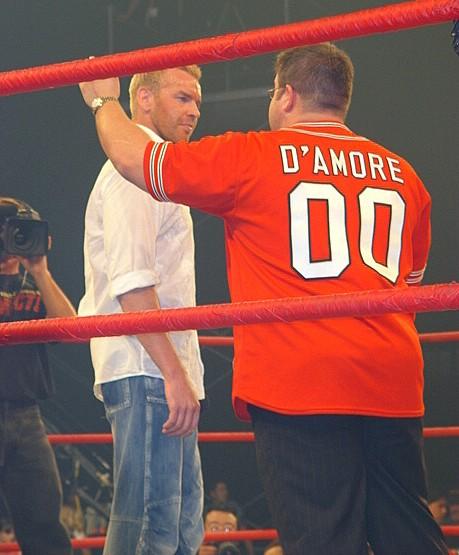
Christian Cage debut at TNA Photo by Rob Beukema
en:Category:Professional wrestling free use media